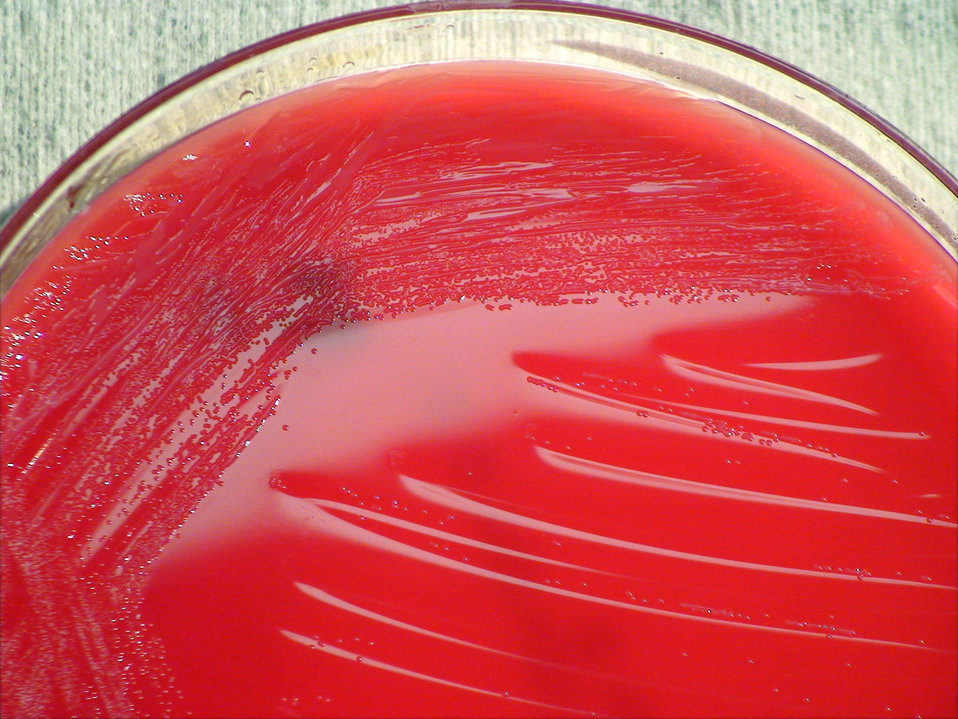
A closer view of PHIL 12373, this photograph depicts light colonial growth displayed by Gram-negative Acinetobacter calcoaceticus bacteria, which was grown on a medium of sheep's blood agar (SBA), for a 24 hour time period, at a temperature of 37�C.What are the symptoms of Acinetobacter infection?